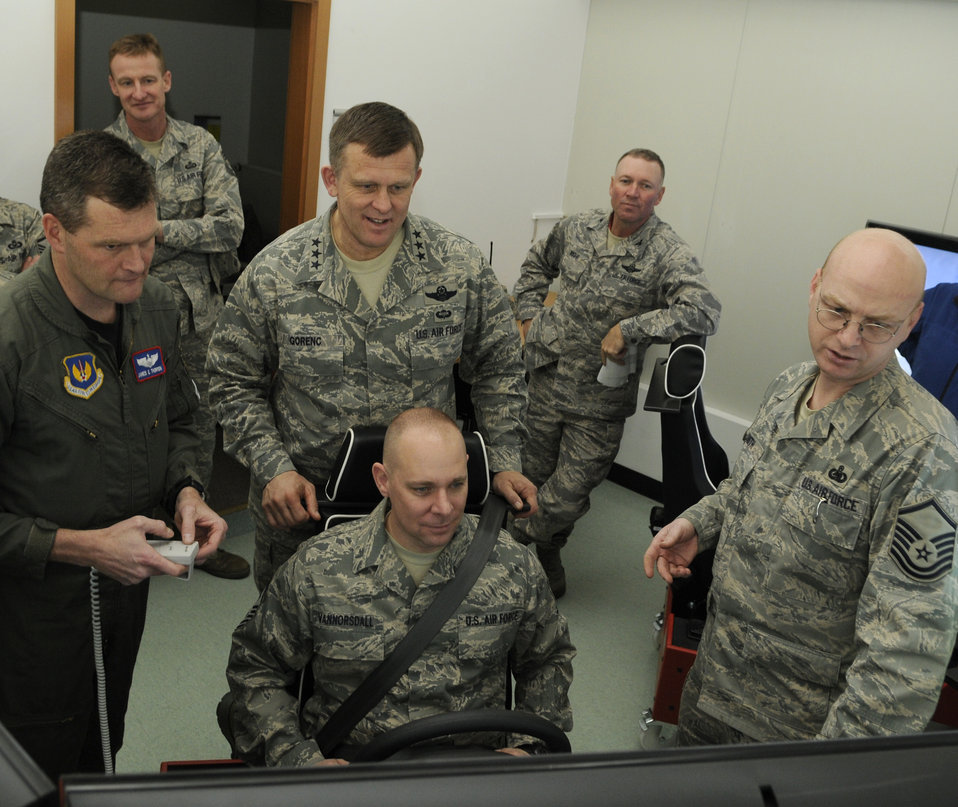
Changes at Spangdahlem

Chief Master Sgt. Dennis Vannorsdall, 3rd Air Force command chief, tries his hand at a driving simulator Feb. 18, 2010, while Lt. Gen. Frank Gorenc, 3rd Air Force commander, looks on during their visit to Spangdahlem Air Base, Germany. General Gorenc and Chief Vannorsdall were visiting Spangdahlem for a tour and to speak to Airmen there about possible operational changes coming to the base.